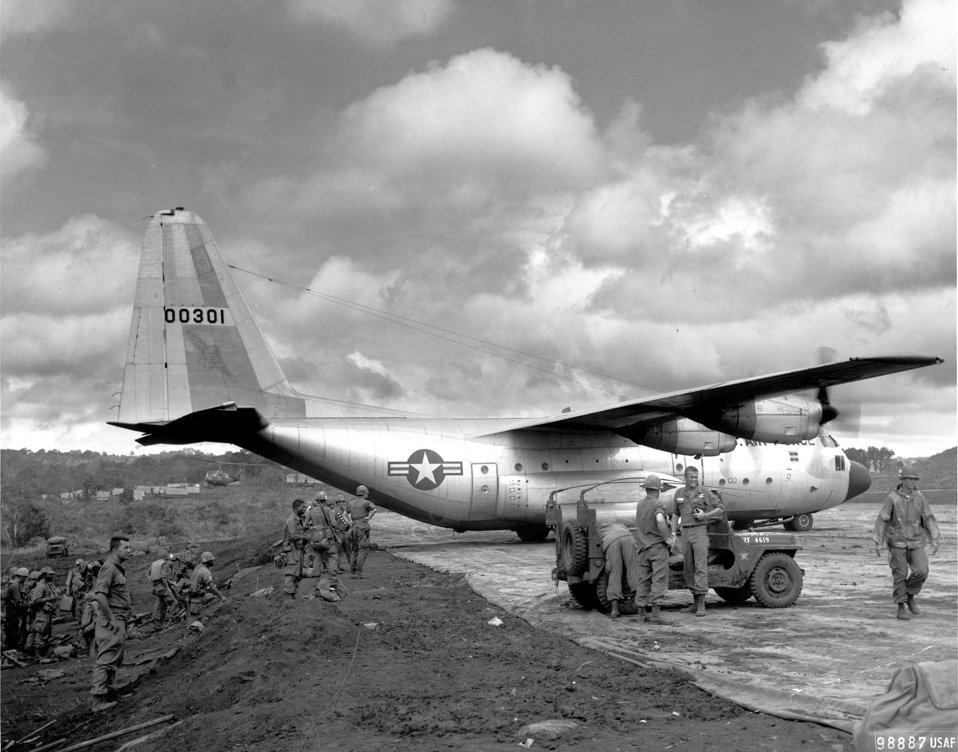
C-130

1960's -- A U.S. Air Force C-130 transport turns at the end of the short runway at Bam Bleh, Vietnam. The transport was one of several taking troops of the First Cavalry Division back to their base camp at An Khe after an operation. Air Force aircraft made daily flights to fields like this one carrying troops and supplies to front line units. 23 November 1966